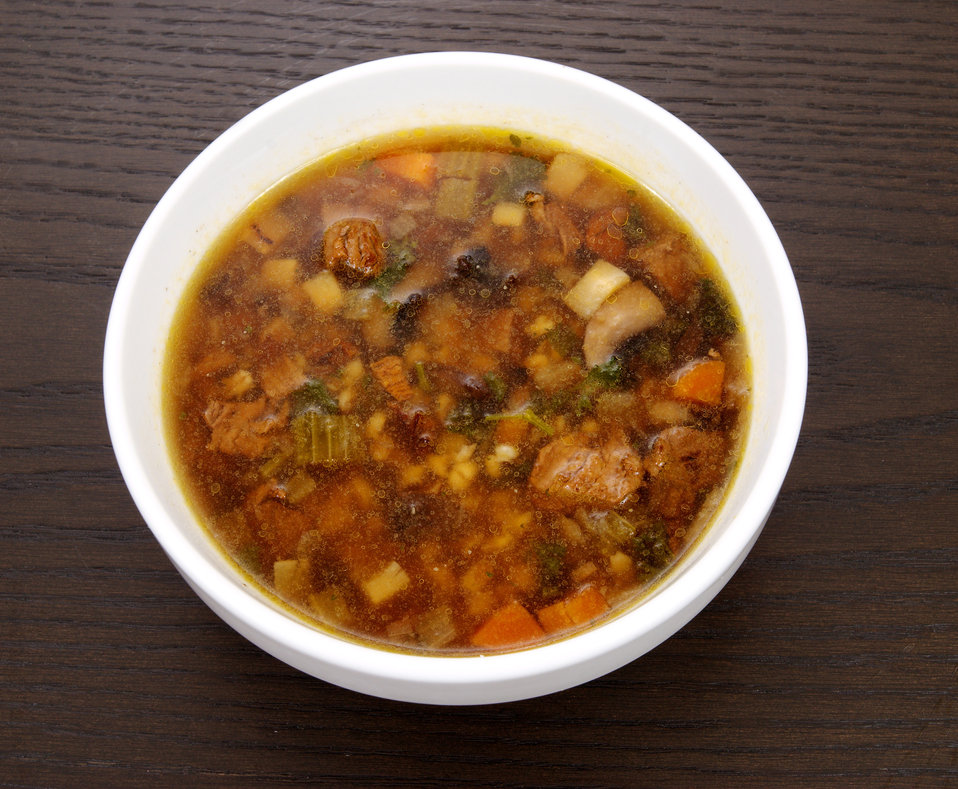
This photograph depicts a bowl of Beef Barley and Lima Bean Soup. As nutritious as it is delicious, the ingredients for this dish includes onion, carrots low-sodium beef broth, lean beef stew meat, pearl barley, salt, pepper, lima or butter beans, and minced parsley. Nutrient-dense, this flavorful soup packs a terrific nutritious punch, and is a great choice as a lunch.